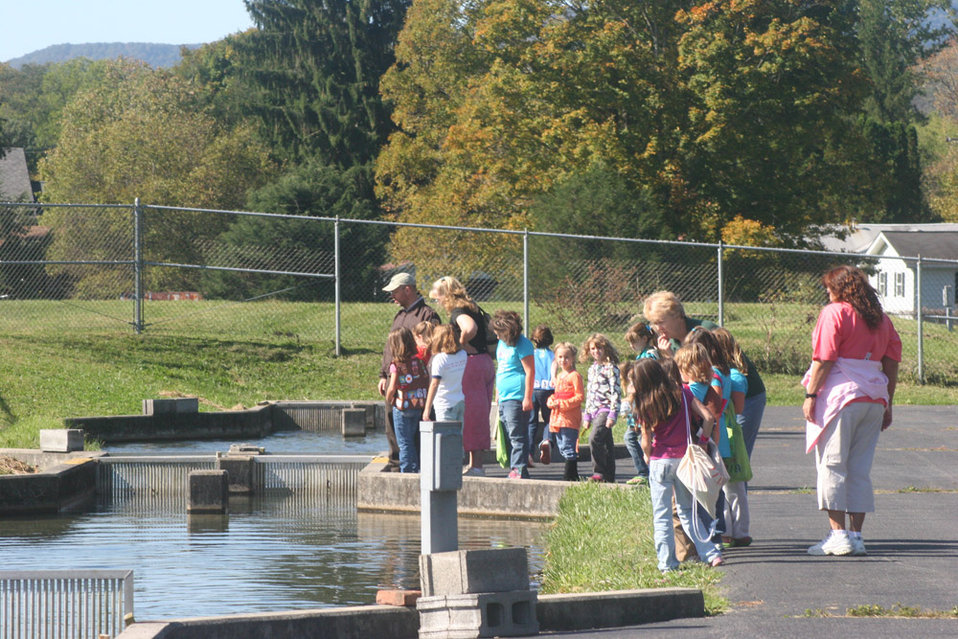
Freshwater Folk Festival (23)